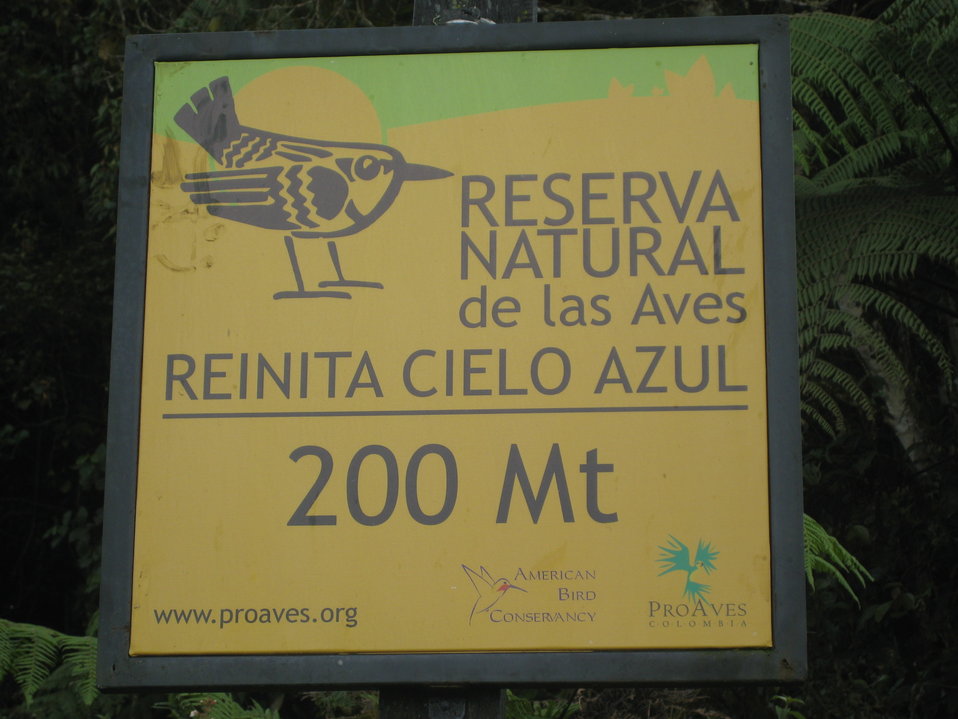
Reserva Natural de las Aves in Colombia